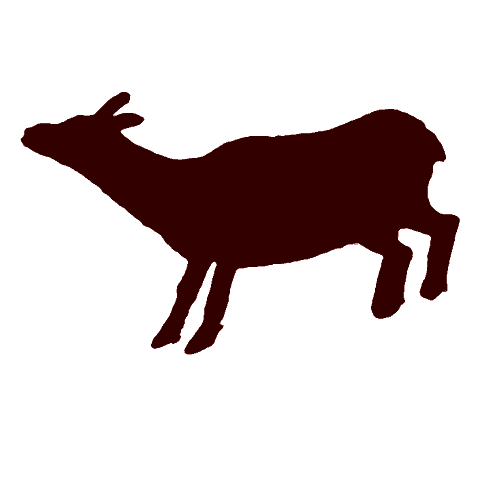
Cierva pintada en rojo con tinta plana del panel 22. Galería A (primer santuario) de la Cueva de La Pasiega, en el monte Castillo, localidad de Puente Viesgo (Cantabria, España)